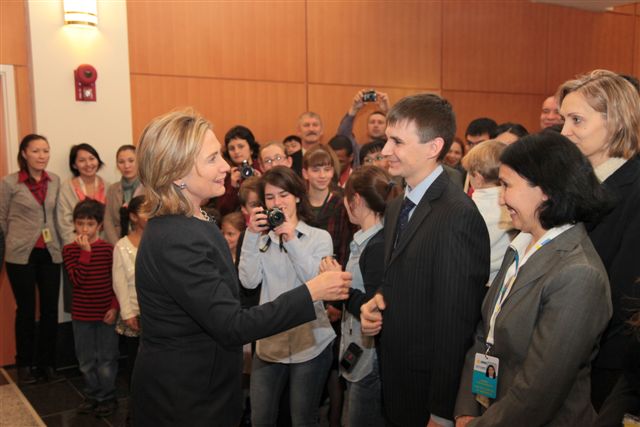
Secretary Clinton Greets Members of the U.S. Embassy Astana Staff

U.S. Secretary of State Hillary Rodham Clinton greets members of the U.S. Embassy Astana staff and their families in Astana, Kazakhstan, on December 1, 2010.